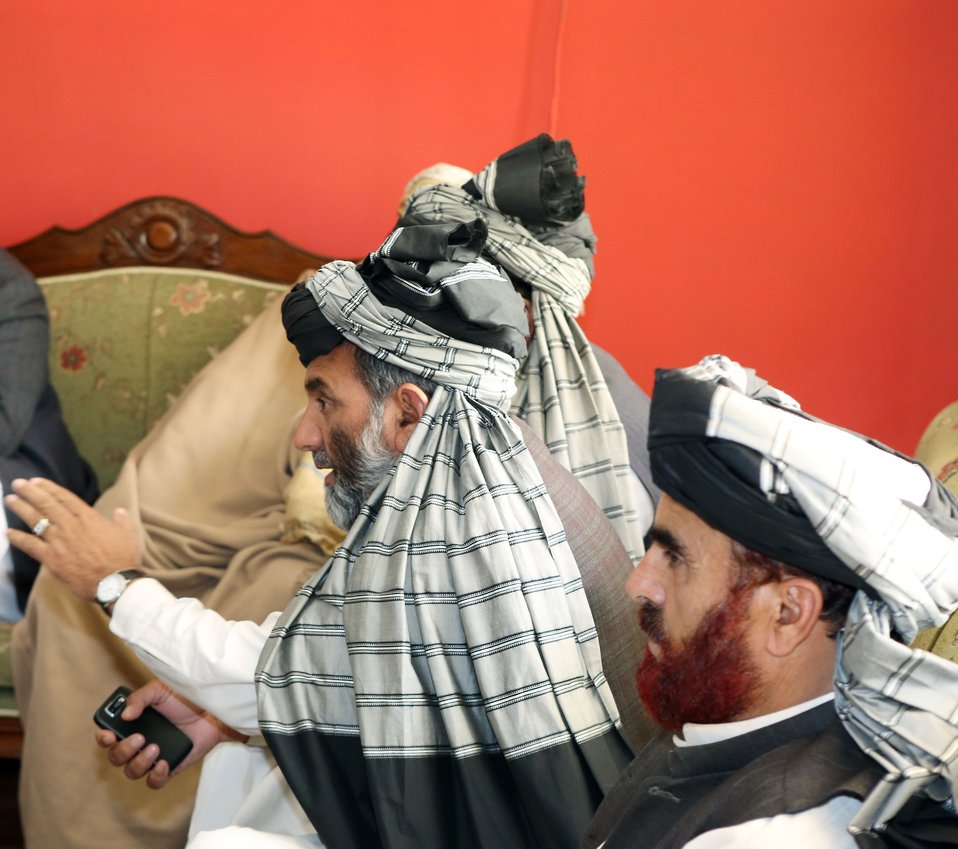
Deputy Ambassador P. Michael McKinley and USAID Mission Director William Hammink met with elders from Khost, Logar, and Paktiya on April 16, 2014 in Kabul. The elders provided community perspectives on rule of law, peace, security, and post-election Afgha